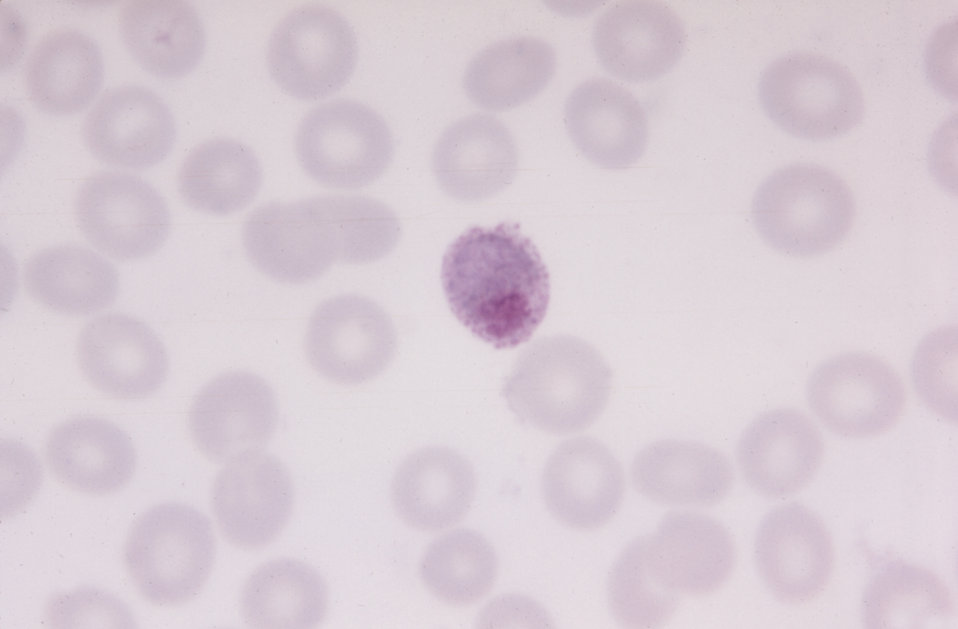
A thin film photomicrograph shows a mature trophozoite of the parasite Plasmodium ovale.